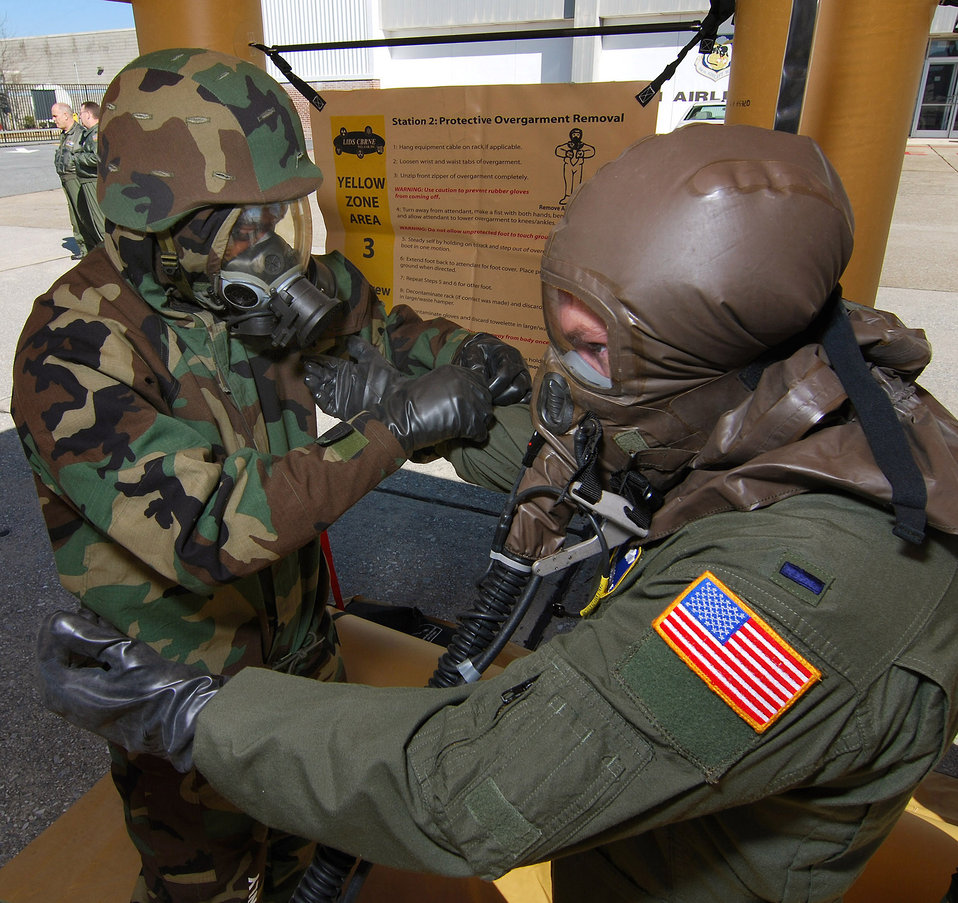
Aircrew Decontamination Training

Tech. Sgt. Preston Caldwell (left) rolls back the flight suit sleeve of 1st Lt. Patrick Croasdale during decontamination training Feb. 6, 2011, at Dobbins Air Reserve Base, Ga. Sergeant Caldwell is an aircrew flight equipment technician. Lieutenant Croasdale is a 700th Airlift Squadron pilot.